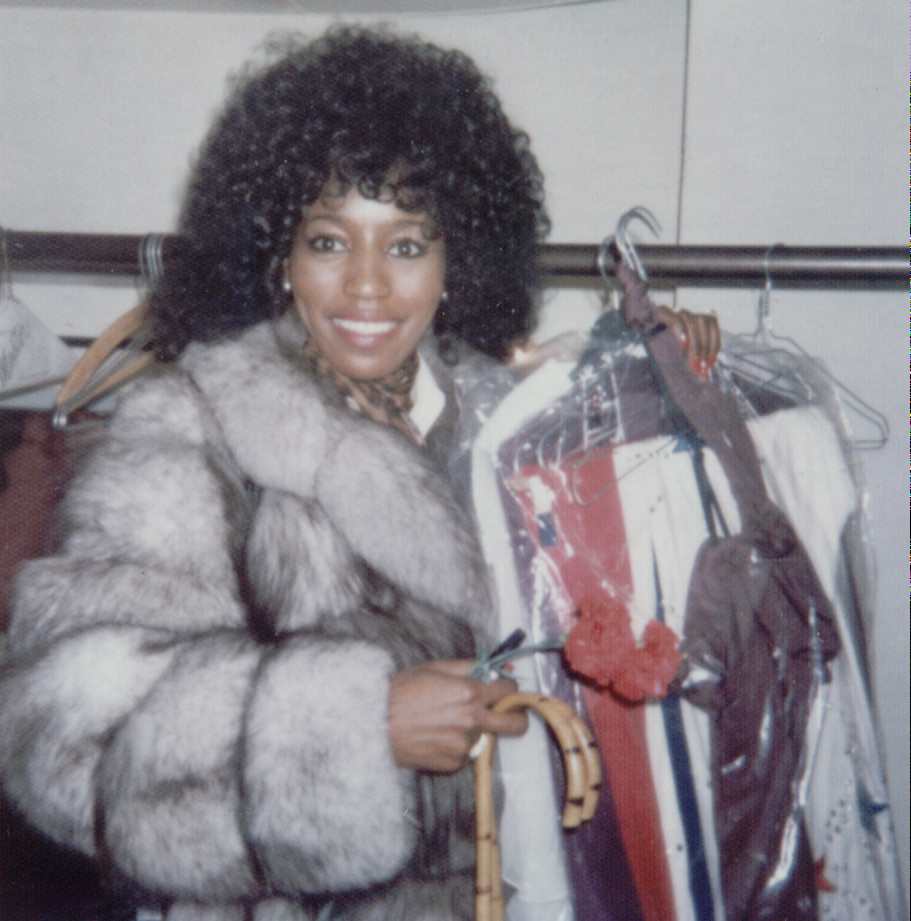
Fayette Pinkney, New Victoria Theatre, London, UK 1974.